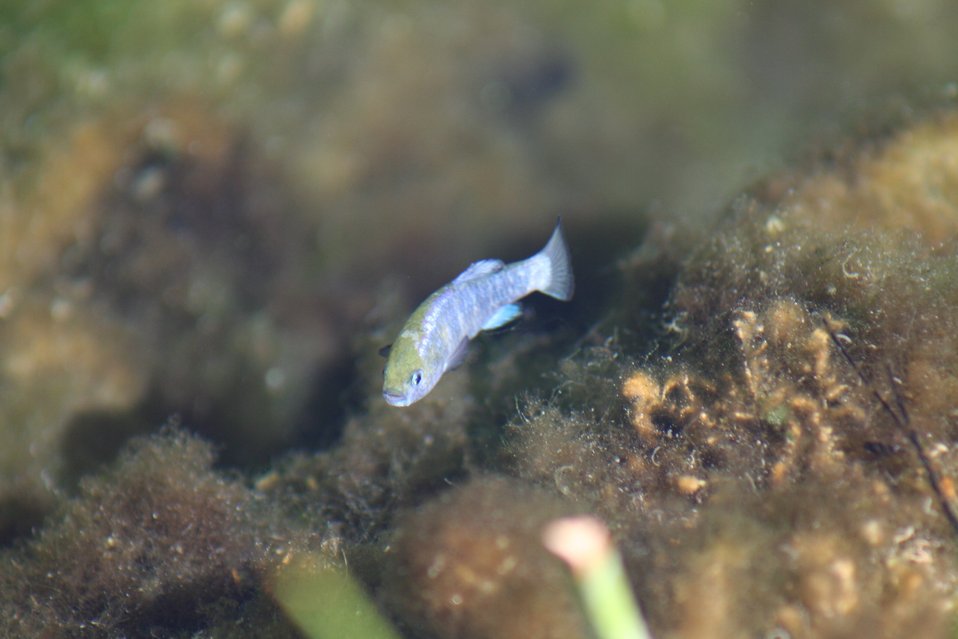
Ash Meadows NWR Amargosa Pupfish

An endangered Ash Meadows Amargosa pupfish swims in King's Pool, along the Point of Rocks Boardwalk, in Ash Meadows National Wildlife Refuge in Nevada. (USFWS)